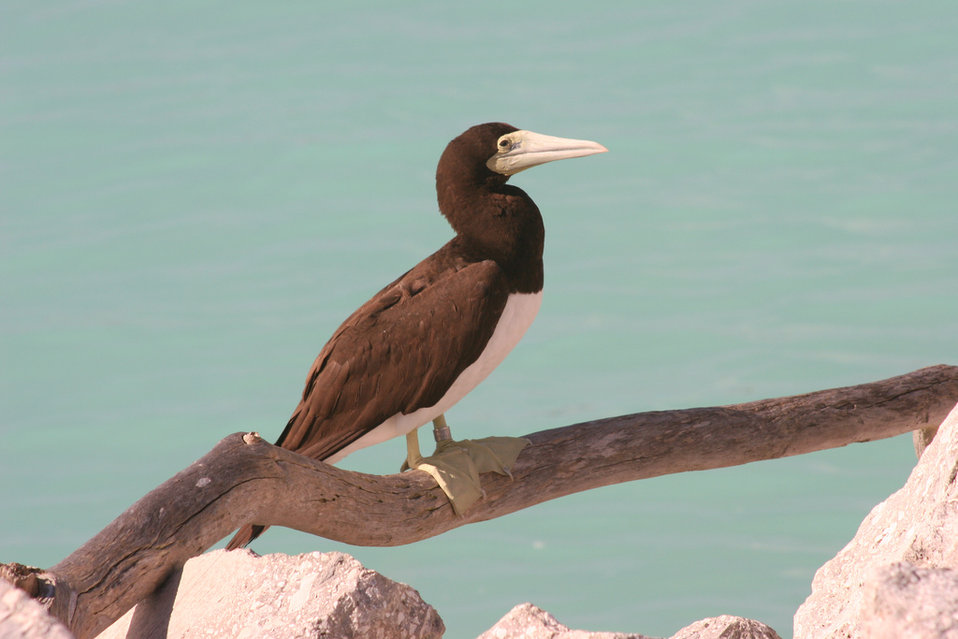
Brown booby perches on driftwood on Midway Atoll National Wildlife Refuge.